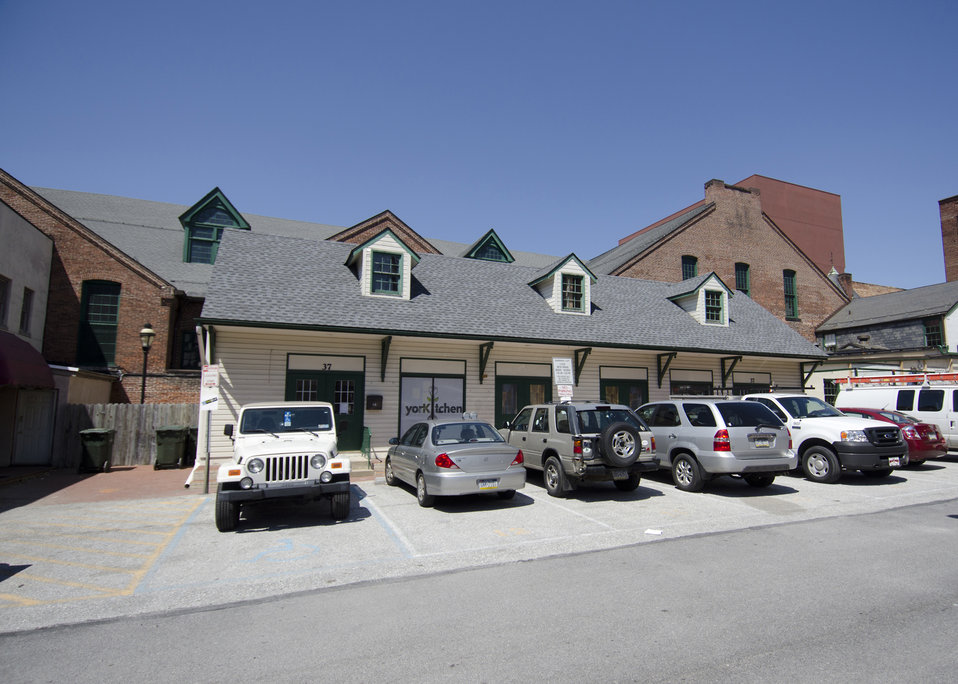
YorKitchen is a shared incubator kitchen that received partial funding through the U. S. Department of Agriculture’s (USDA) Rural Development (RD) Rural Business Enterprise Grant (RBEG) program. This program provides grants for rural projects that finance and facilitate development of small and emerging rural businesses, distance- learning networks, and employment related adult education programs. YorKitchen is a commercially equipped and fully licensed kitchen in which new entrepreneurs can prepare new products without the associated start up costs. This “incubator kitchen” provides full business support to include invoicing, accounting, advertising, outreach, and marketing for entrepreneurs. The YorKitchen is housed in the annex of Central Market in York, PA. This location offers local agricultural producers increased opportunities to develop new value-added products with their produce.